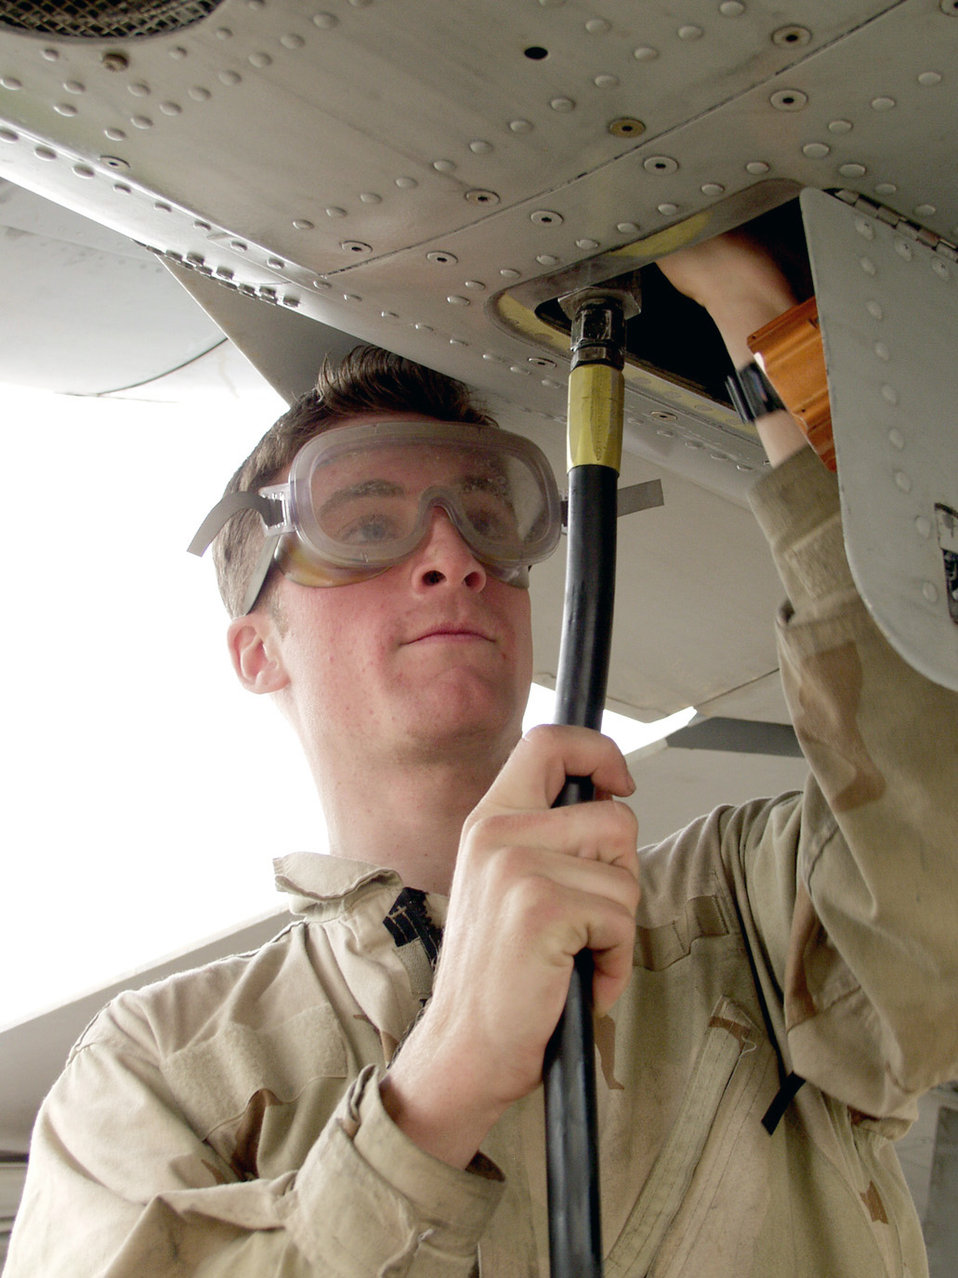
Crew chiefs keep A-10s flying

KIRKUK AIR BASE, Iraq -- Airman 1st Class Sean Dailey changes an A-10 Thunderbolt II's hydraulic fluid here. He is a crew chief assigned to the 355th Expeditionary Aircraft Maintenance Squadron.